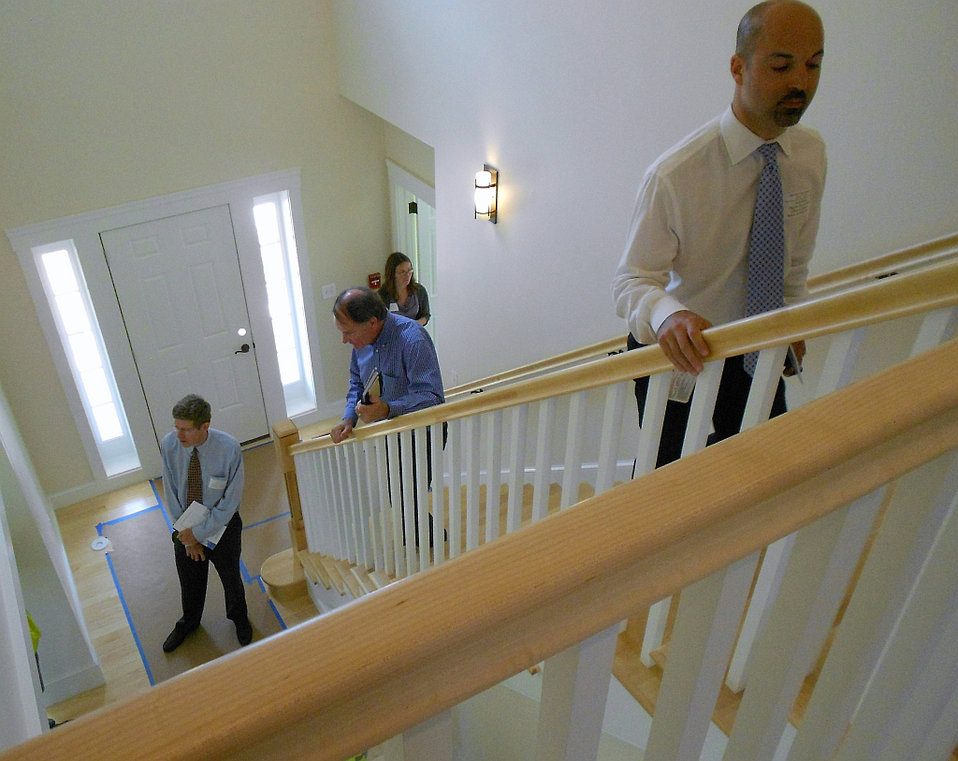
Net Zero Energy Residential Testing Facility Tour

Dr. Hunter Fanney (center) Chief of the Building Environment Lab in NIST’s Engineer Lab and Amit Ronen (far right) Deputy Chief of Staff for U.S. Senator Marie Cantwell walk up stairs to the second floor of NIST’s Net Zero Energy Residential Test Facility in advance of Senate Energy & Natural Resources Committee Staffers Allen Stayman (left) and Allison Seyforth (center background) during a tour of the test home.